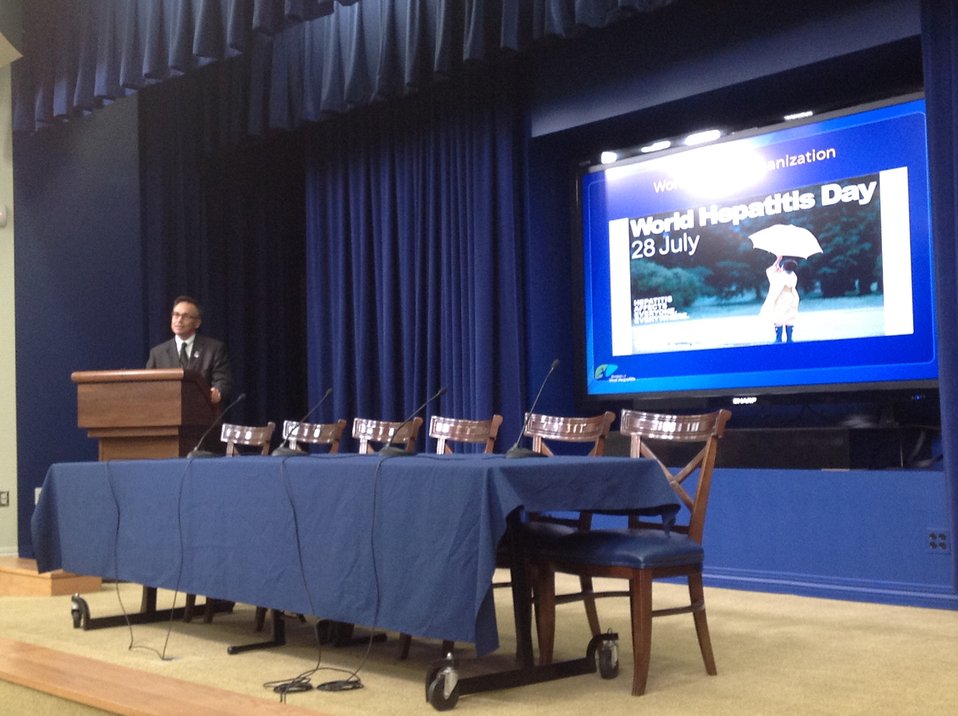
Dr. John Ward

WH 2012 World Hepatitis Day Event